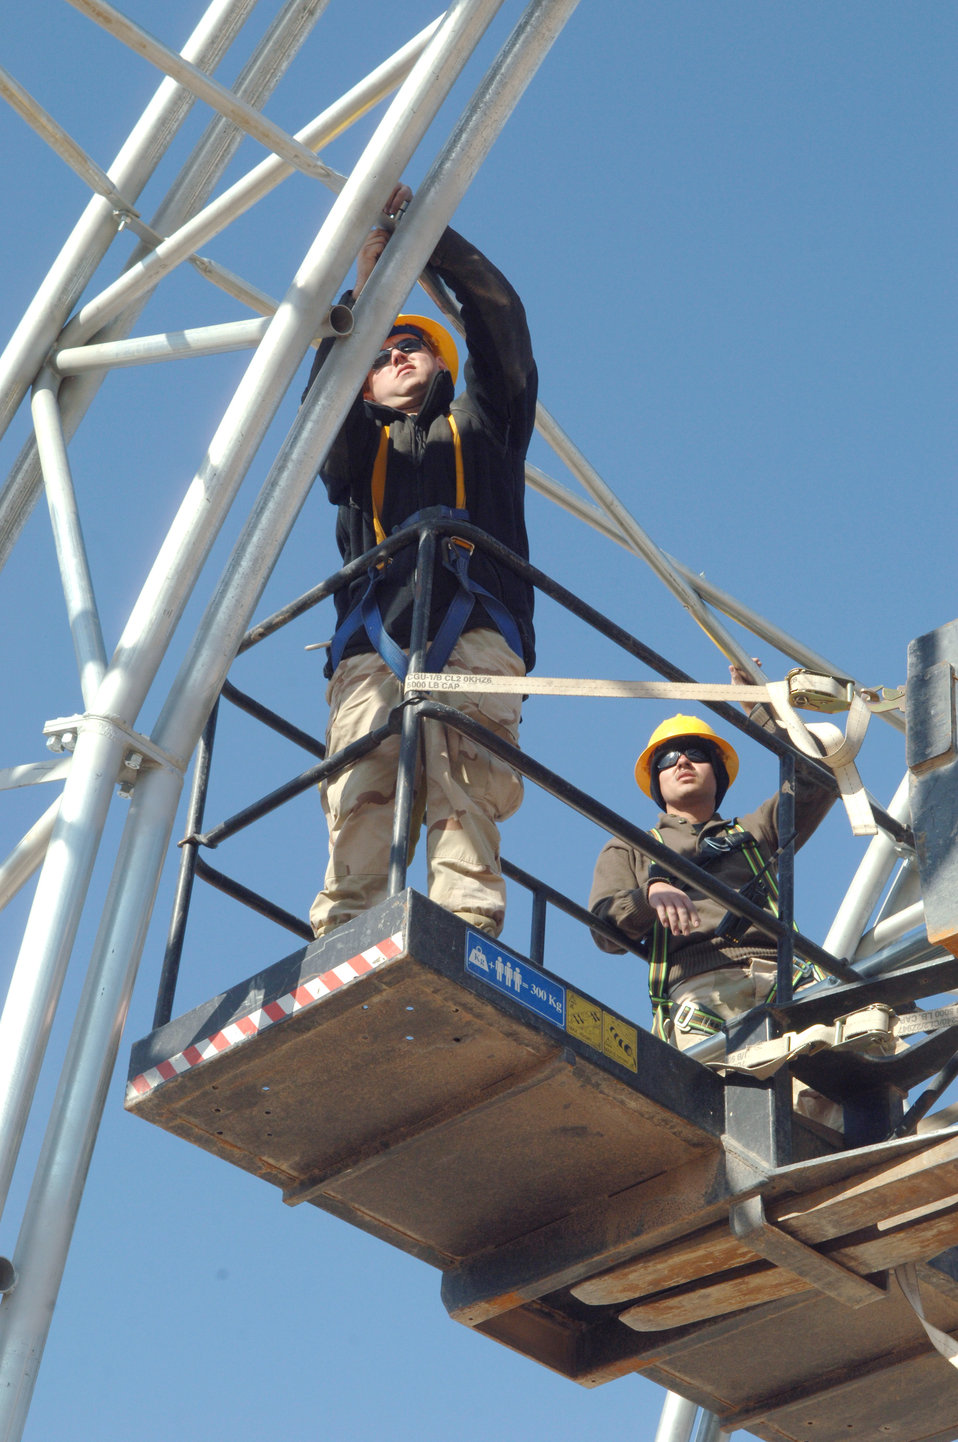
Shelter construction

Senior Airman Brandon Braley and Airman 1st Class Andre Cervantes with the 332nd Expeditionary Civil Engineer Squadron Structures shop, attach a support beam to the new Hunter Unmanned Aerial Vehicle shelter arches Nov. 26. The 20-day project at Balad Air Base, Iraq., will take approximately 3,200 man hours to complete.